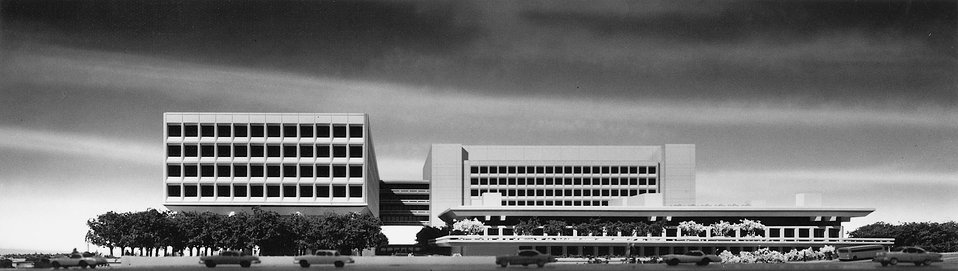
Federal Office building No. 5 Washington DC